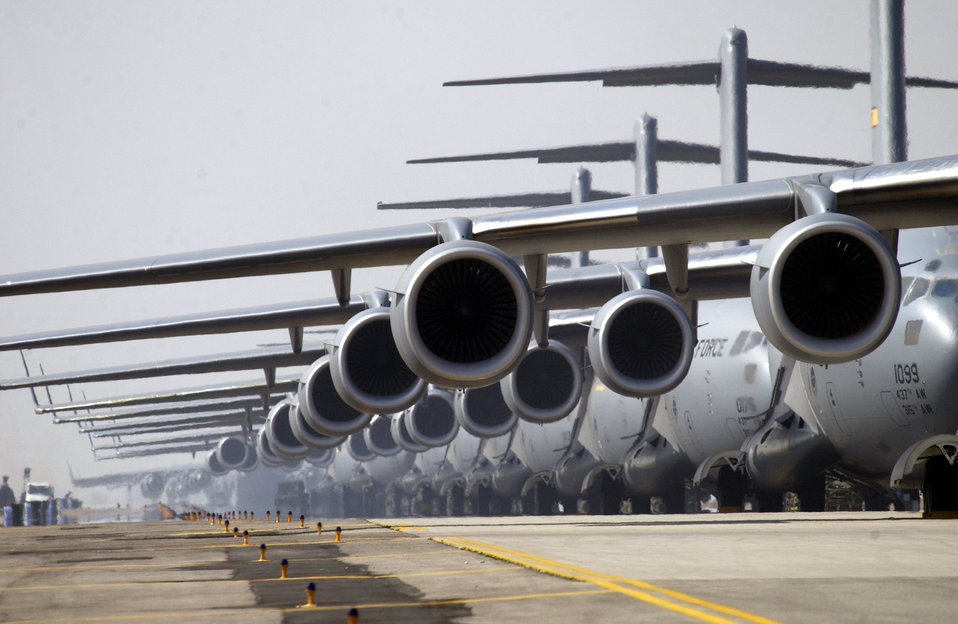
In line

OPERATION IRAQI FREEDOM -- U.S. Air Force C-17 Globemaster IIIs are lined up waiting to transport U.S. Army and Air Force personnel forward from an air base in Europe in support of Operation Iraqi Freedom on March 26.